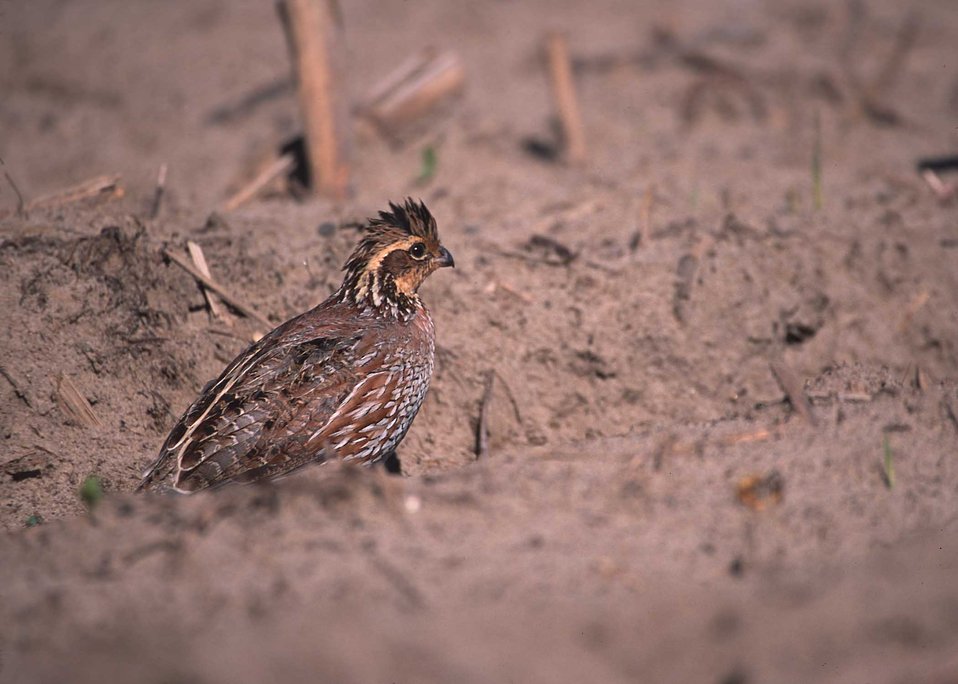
Bobwhite quail on Project Wings site in Georgia. Project implemented by NRCS, RC&D, and Georgia Power Company.